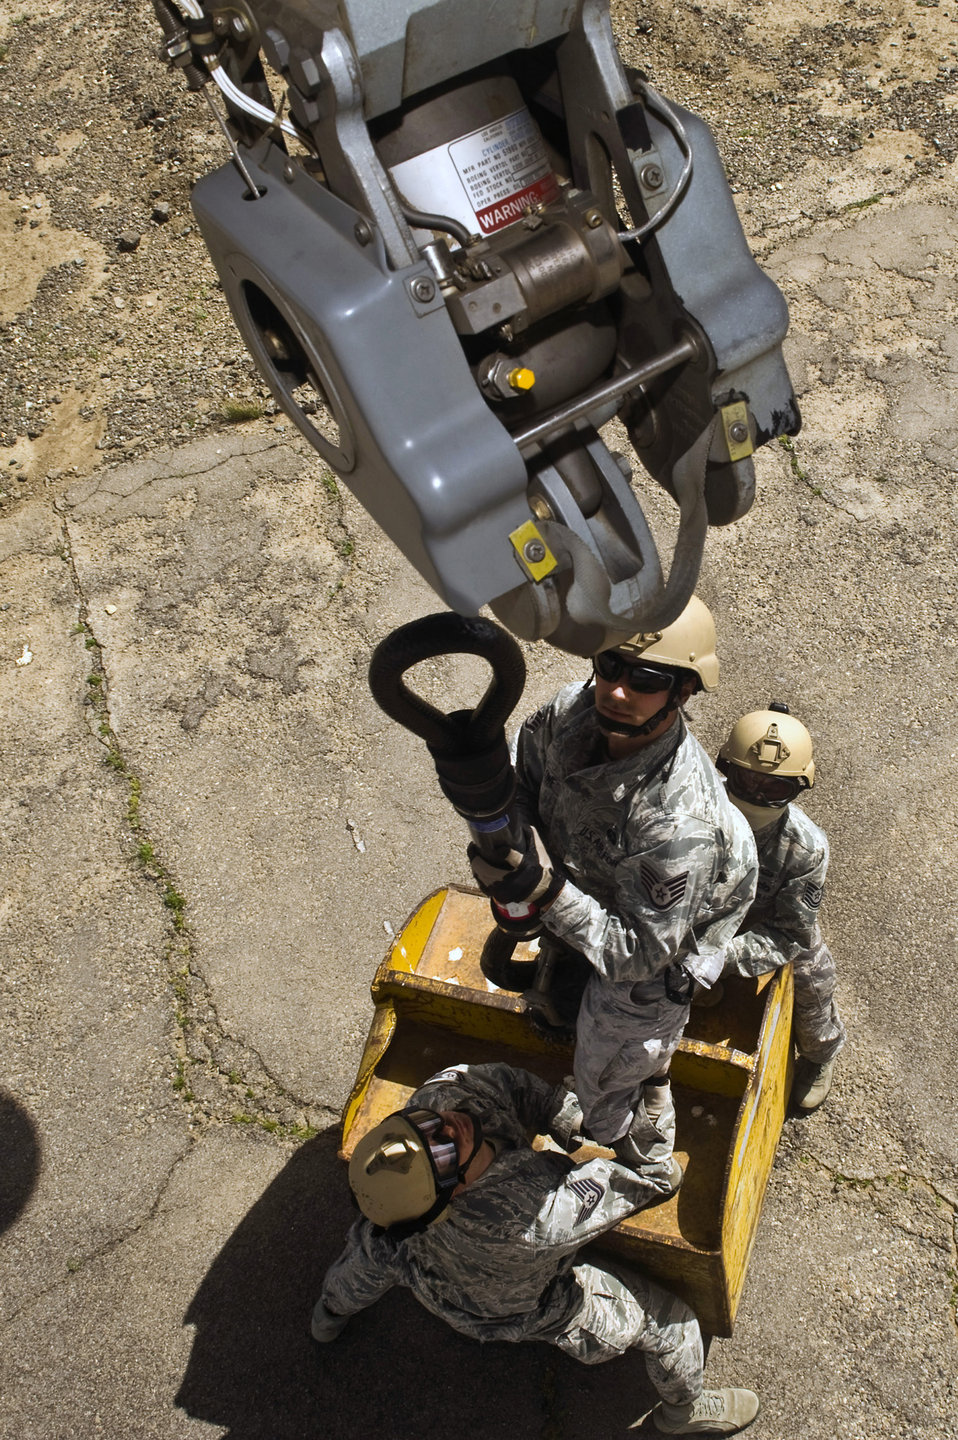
Getting attached

Staff Sgt. Jeremy Lowe attaches an 11,000-lb block to an Army National Guard CH-47 Chinook helicopter while Tech. Sgts. Joshua Tully and Joshua Ramos provide safety observation June 28, 2011, during training at the Senator Harry Reid Readiness and Training Center near Stead, Nev. All three NCOs are assigned to the 820th RED HORSE squadron.